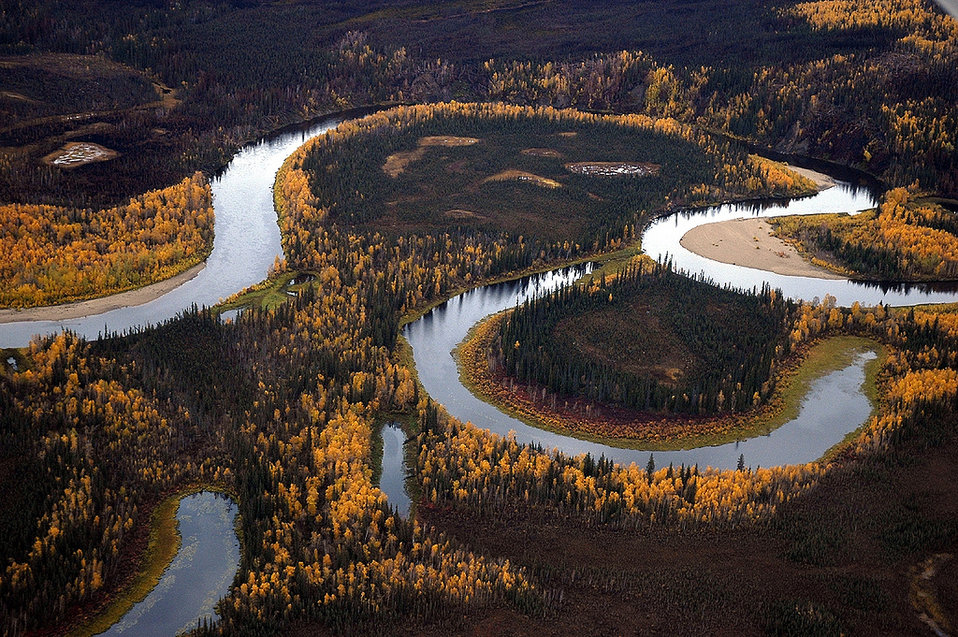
Kanuti River

The Kanuti River winds through banks of golden trees in autumn on the Kanuti National Wildlife Refuge in Alaska.